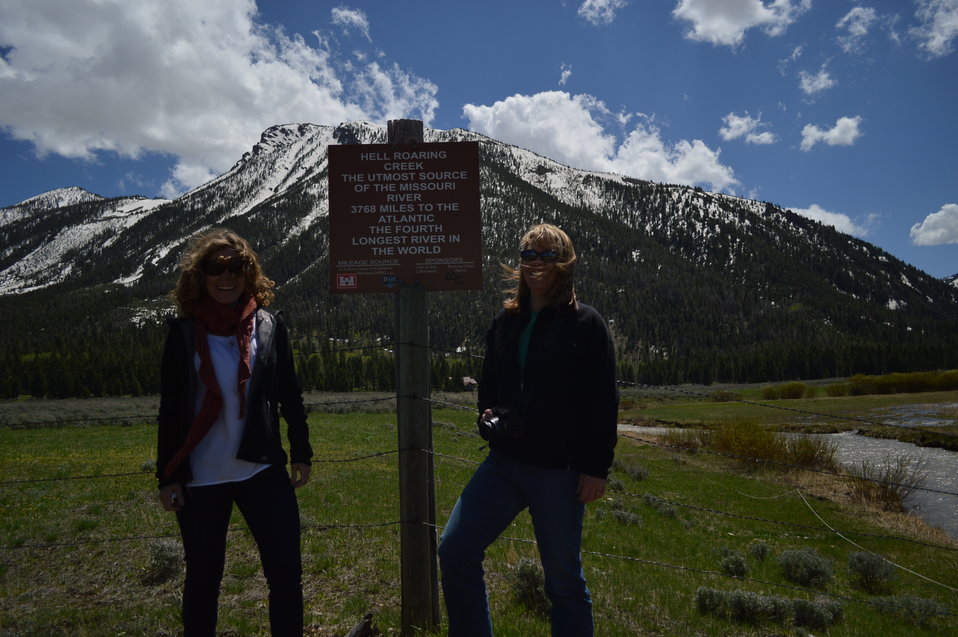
Regional Leadership Visit to Montana 2014